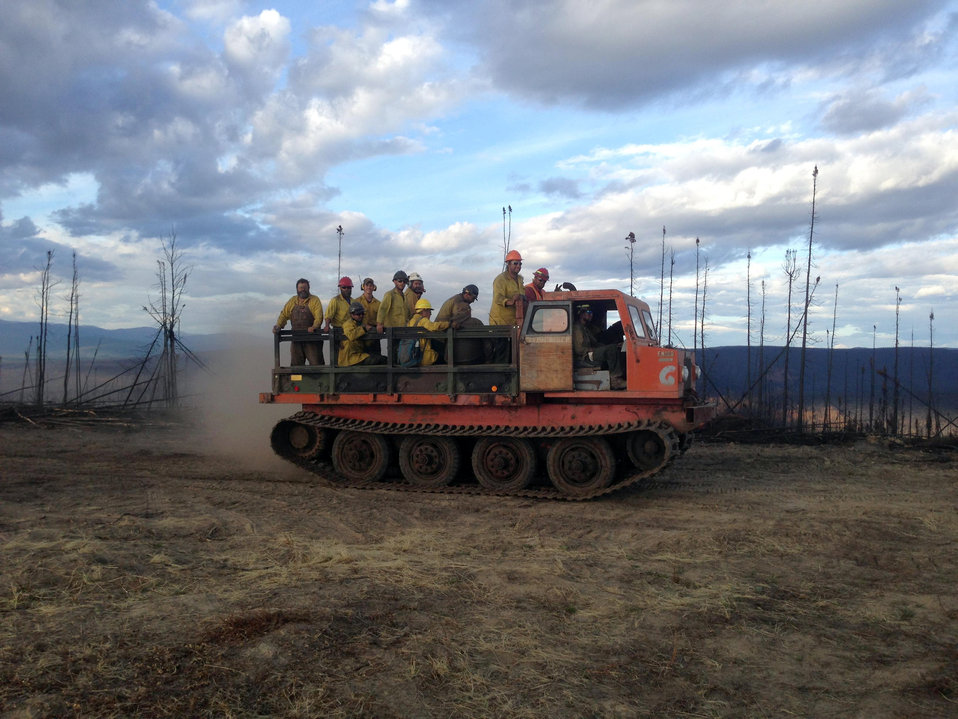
Firefighters ride a Skidgen to the Stewart Creek Fire line on Jul. 27, 2013. The Stewart Creek Fire located 25 miles east of North Pole, AK began on Jun. 19, 2013 due to human causes and has consumed an estimated 85, 475 acres. The fire is approximately 71% contained.